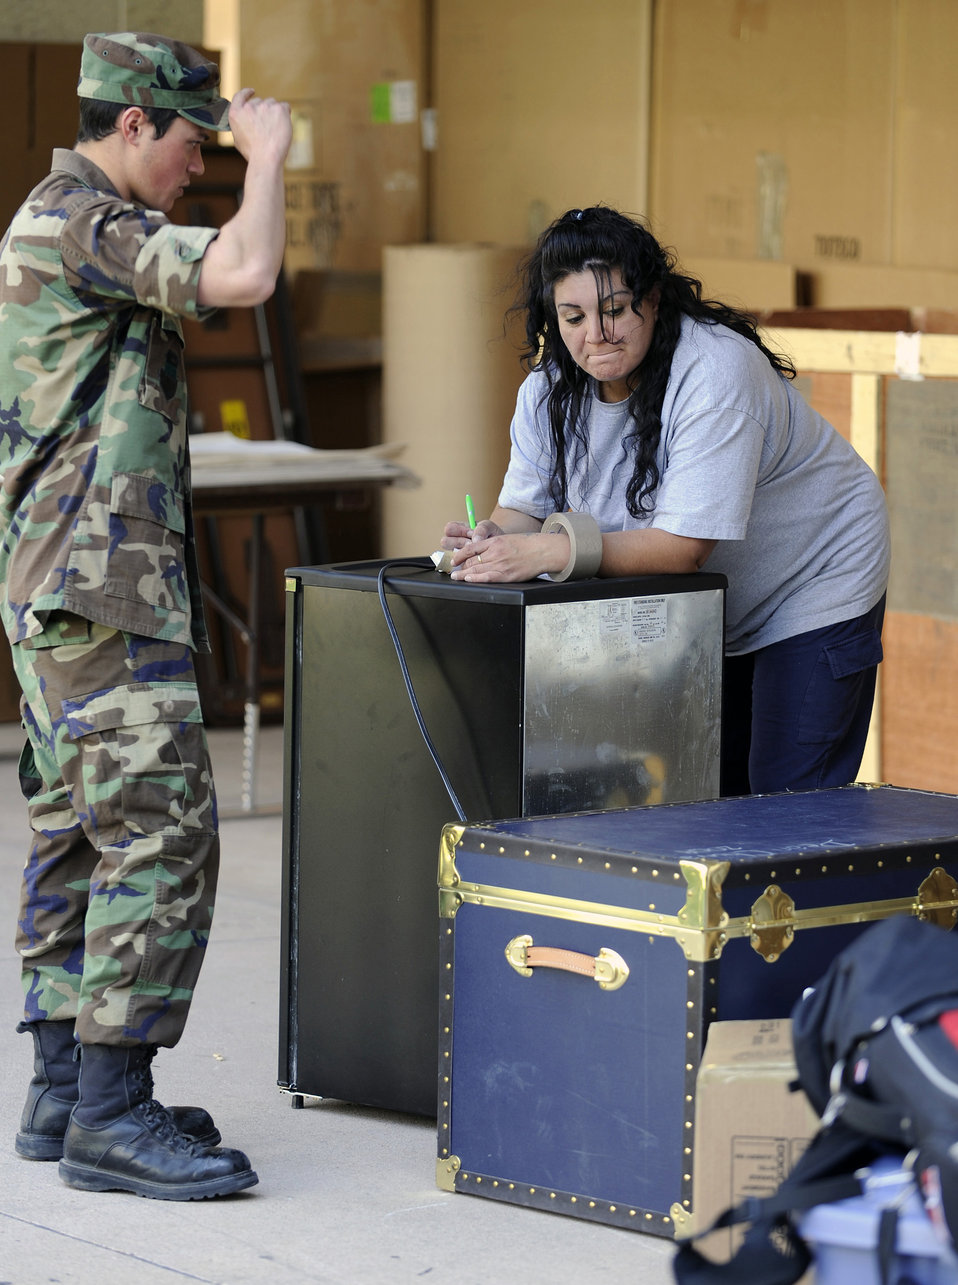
Move out!

Air Force Academy Cadet Dean Chuva, a member of the graduating class of 2009, takes inventory of his baggage at the staging area at Sijan Hall at the Academy in Colorado. With only six days until graduation, many preparations must be done before commissioning and entering active duty.